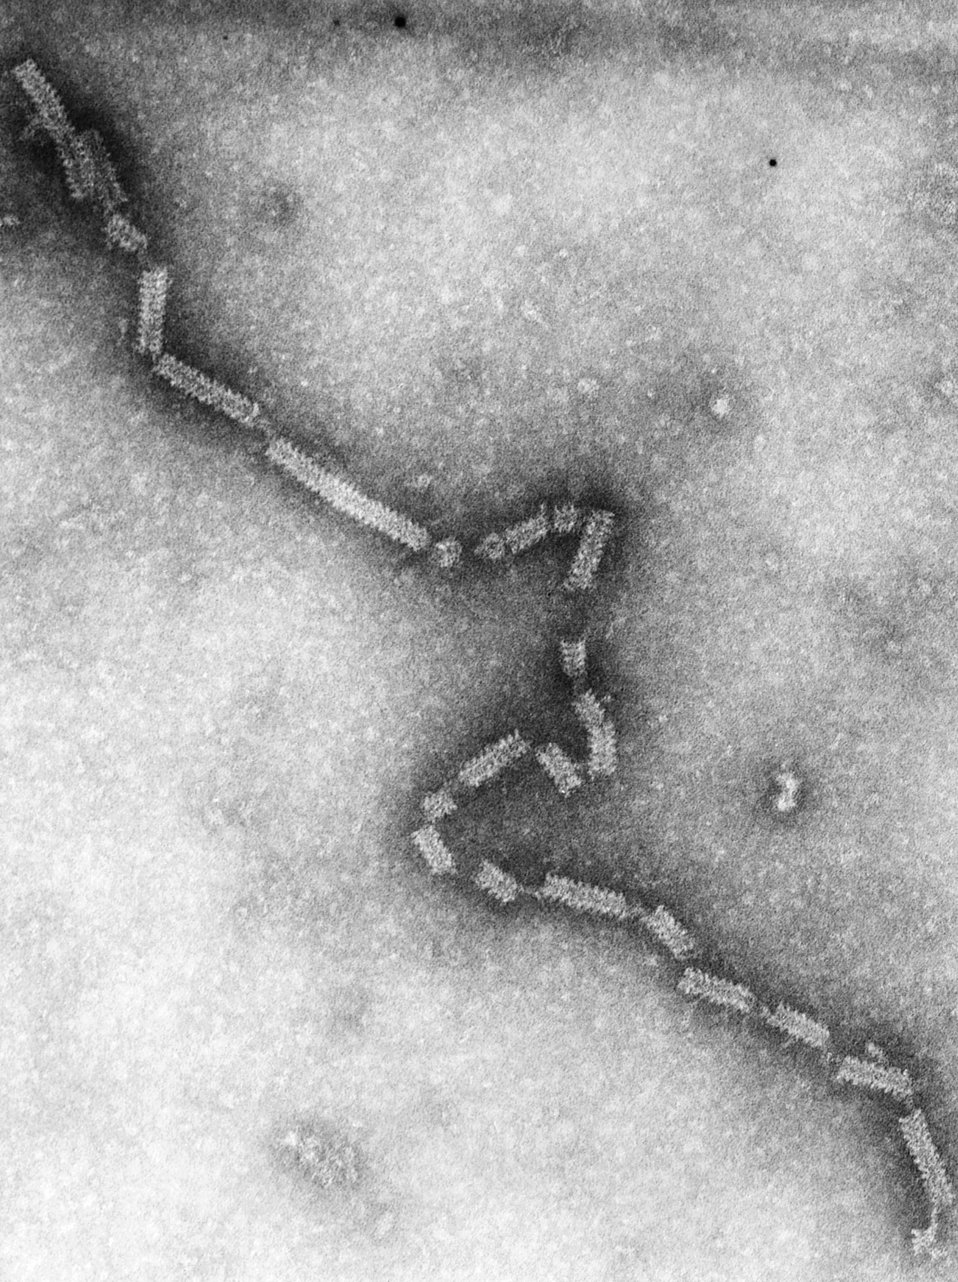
This transmission electron micrograph (TEM) revealed some of the nucleocapsid morphologic features displayed by the human parainfluenza virus Type-4a (HPIV-4), a member of the Paramyxoviridae family. These viruses possess a genome consisting of negative-sense single-stranded RNA ((-) ssRNA).Each of the four HPIVs has different clinical and epidemiologic features. The most distinctive clinical feature of HPIV-1 and HPIV-2 is croup (i.e., laryngotracheobronchitis); HPIV-1 is the leading cause of croup in children, whereas HPIV-2 is less frequently detected. Both HPIV-1 and -2 can cause other upper and lower respiratory tract illnesses. HPIV-3 is more often associated with bronchiolitis and pneumonia. HPIV-4 is infrequently detected, possibly because it is less likely to cause severe disease. The incubation period for HPIVs is generally from 1 to 7 days.